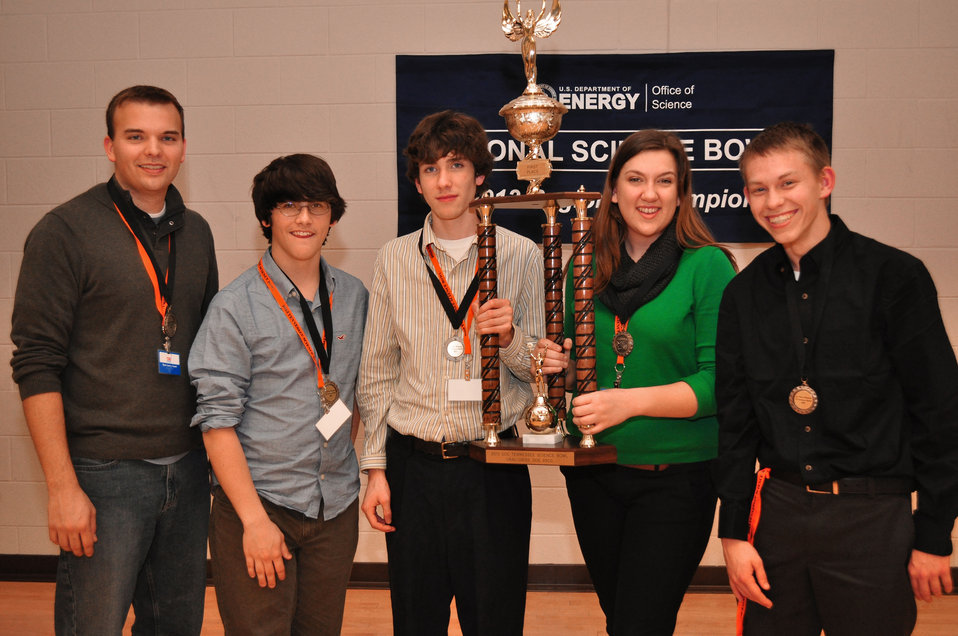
Summit High 1st Place Tennessee Science Bowl 2013

13-010 DOE photo Lynn Freeny 2-23-2013 Left to right Coach Ryan Lowry, Anthony Kupecz, Josh Allen, Lauren Flader, and Camden McNeely Maryville Tennessee